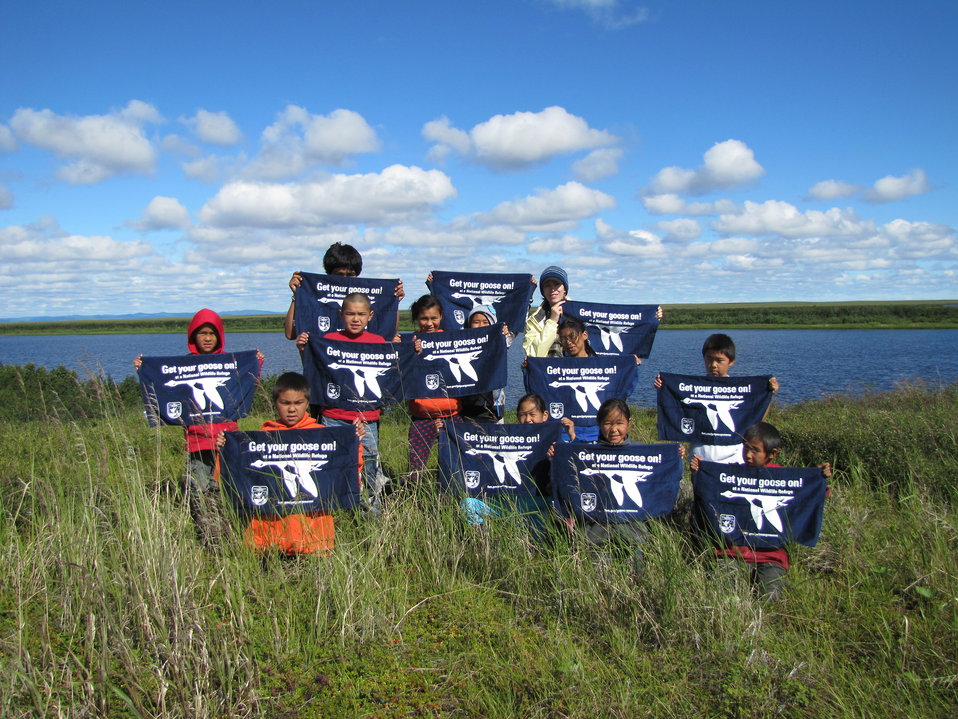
Get Your Goose On!

Youth from the Iñupiaq village of Selawik, north of the Arctic Circle in Alaska, pose along the banks of the Selawik River during a refuge-led fishing activity.